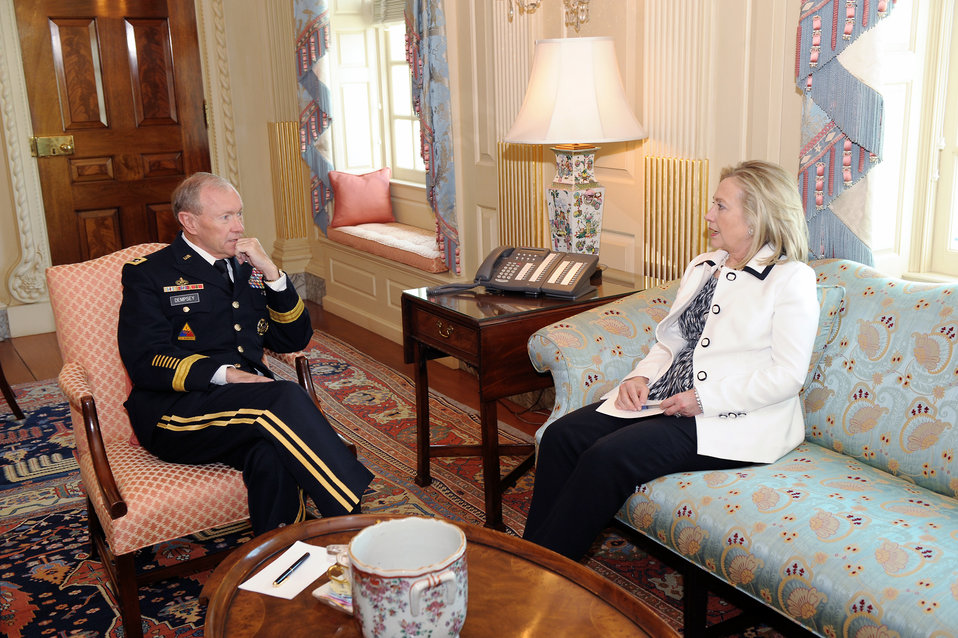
Secretary Clinton Meets With General Dempsey

U.S. Secretary of State Hillary Rodham Clinton meets with General Martin Dempsey, Incoming Chairman of Joint Chiefs of Staff, at the U.S. Department of State in Washington, D.C., on August 17, 2011.